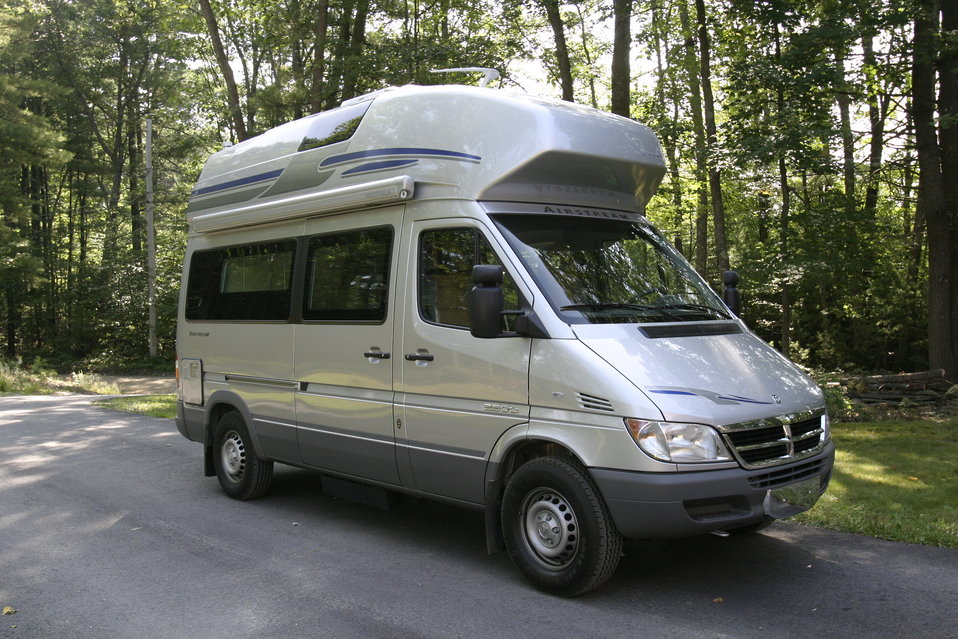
2004 Airstream Sprinter Westfalia